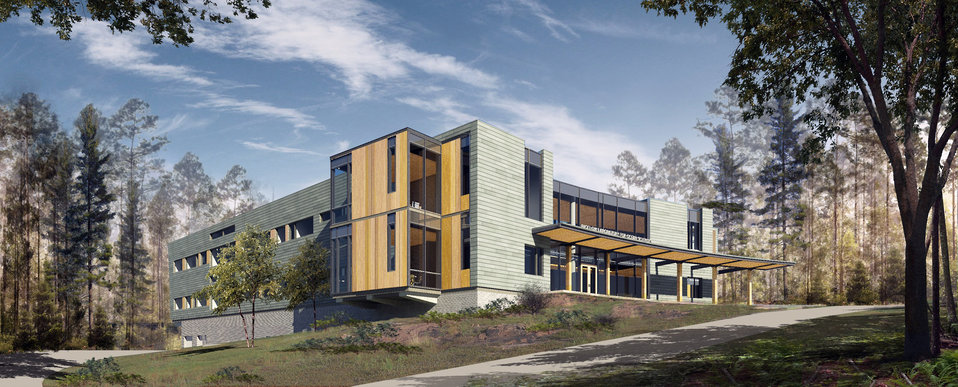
NCGP Construction Grant - Center for Ocean Health

The Center for Ocean Health (to the right) will form part of the Bigelow Ocean Sciences Campus also comprising the Bigelow Center for Blue Biotechnology (to the left).